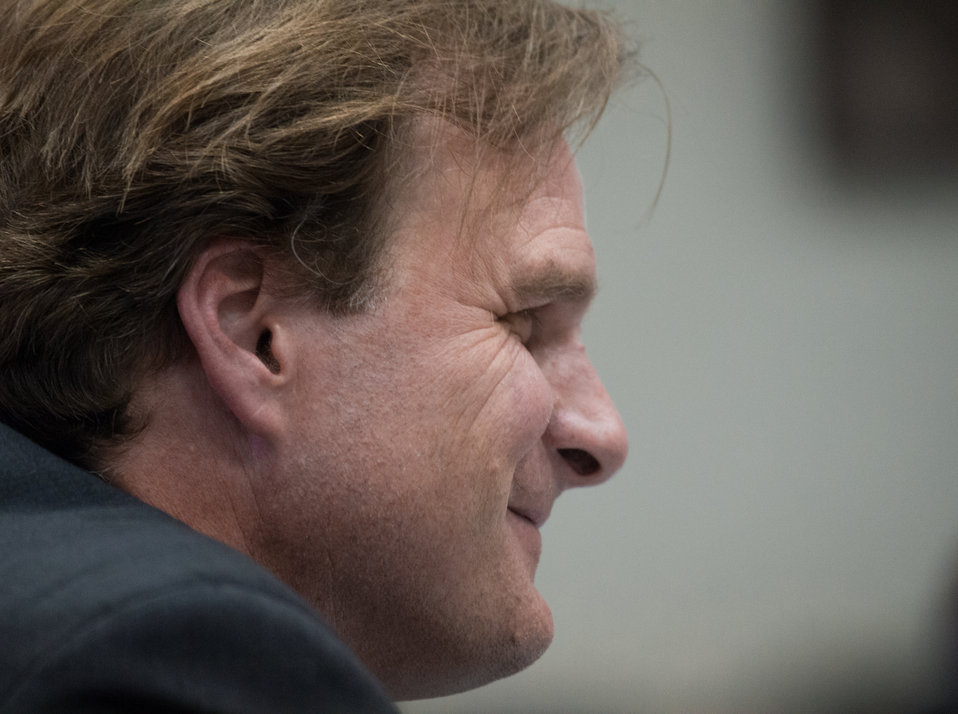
U.S. Department of Agriculture (USDA) Under Secretary for Natural Resources and Environment (NRE) Robert Bonnie and other USDA leaders meet with The People’s Republic of China Ministry of Agriculture (MOA) Vice Minister H.E. Zhang Taolin and the Chinese Agricultural Delegation at the USDA headquarters Whitten Building, in Washington, D.C., on Friday June 13, 2014.